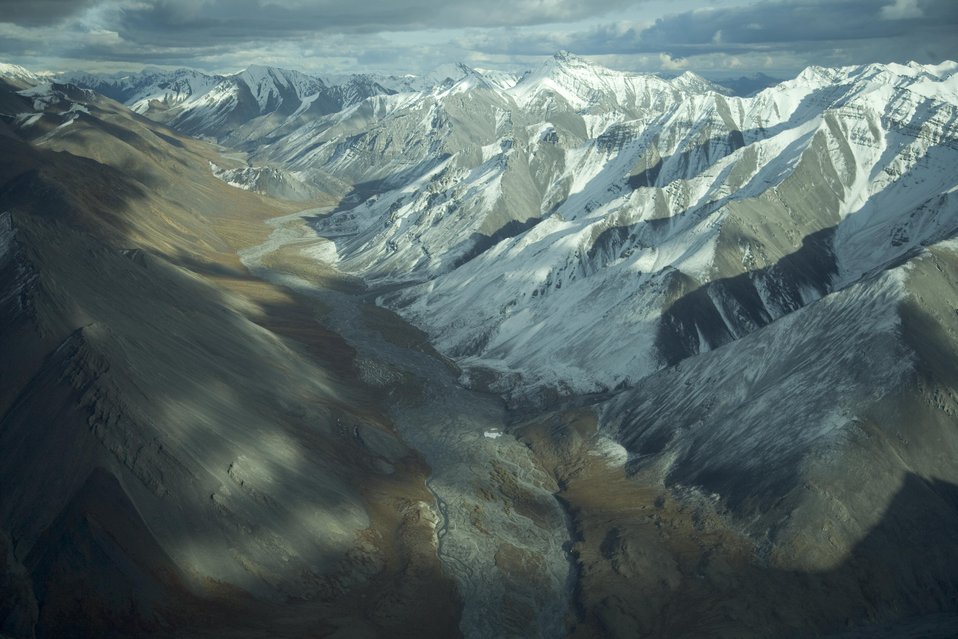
Arctic National Wildlife Refuge